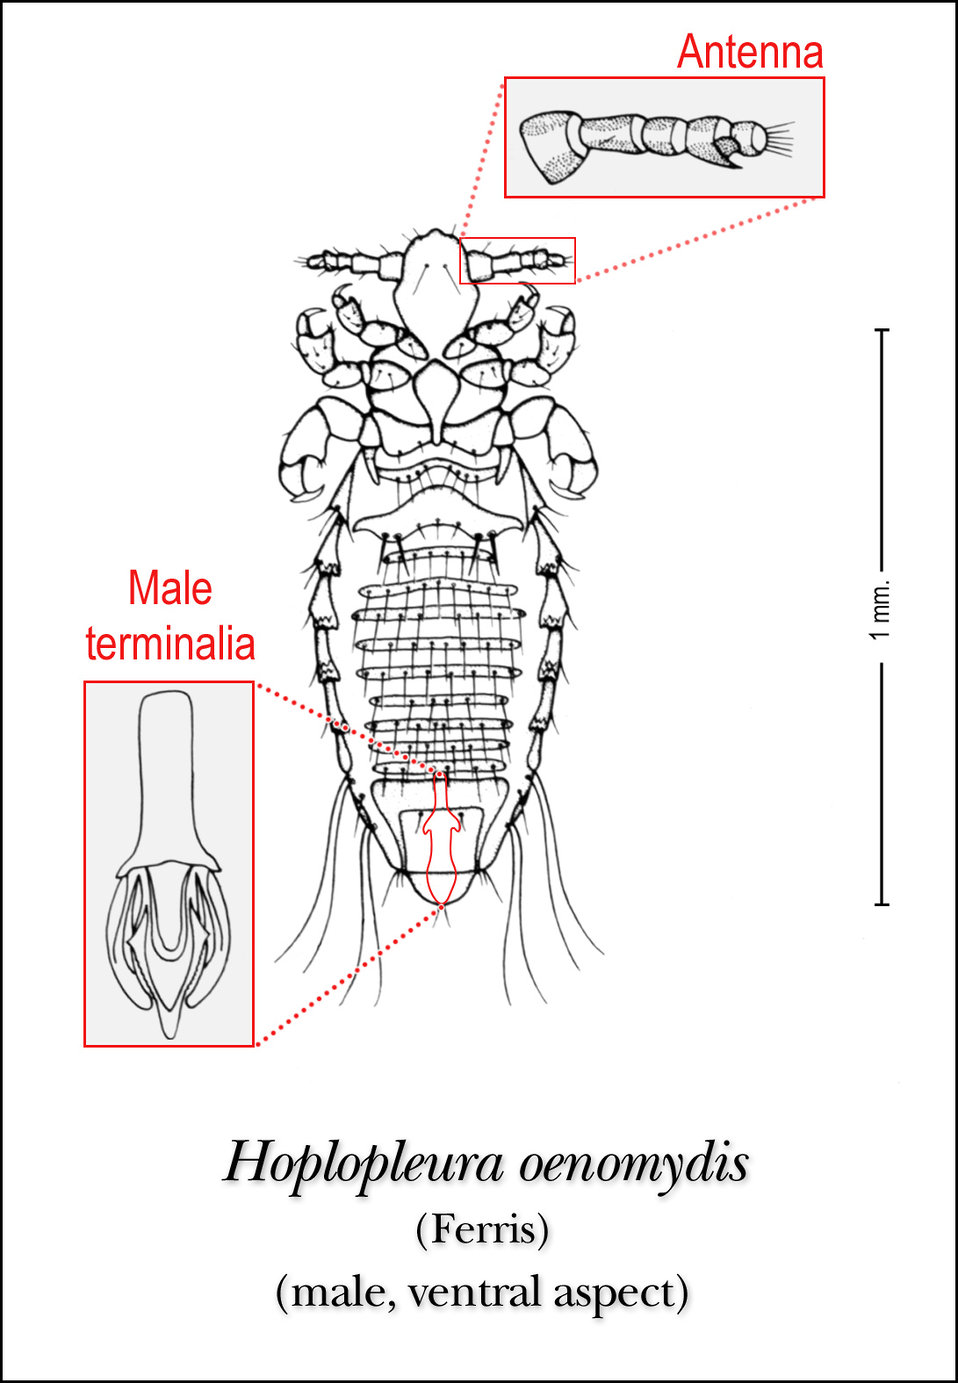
This illustration depicts the ventral features of the male louse, Hoplopleura oenomydis.